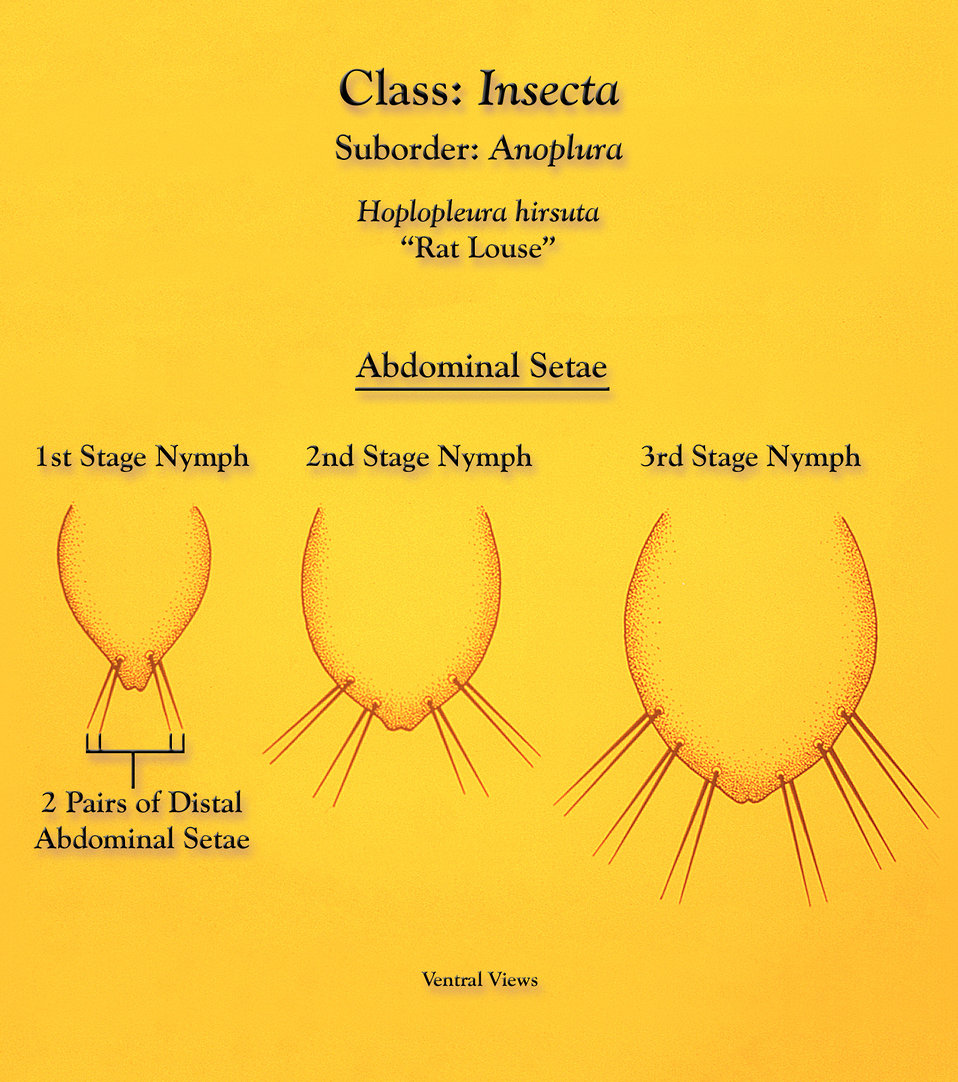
This illustration depicts the morphologic characteristics found to be displayed by the Anopleural sucking 'rat louse', Hoplopleura hirsuta during its first, second, and third nymphal stages.